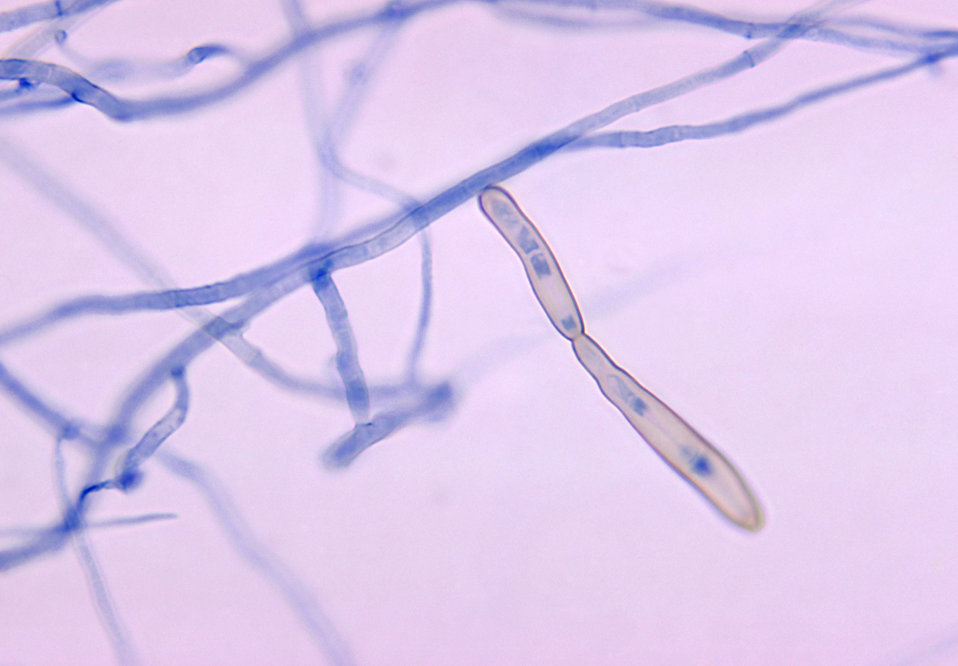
This photomicrograph shows the conidia of the fungus Corynespora cassiicola.